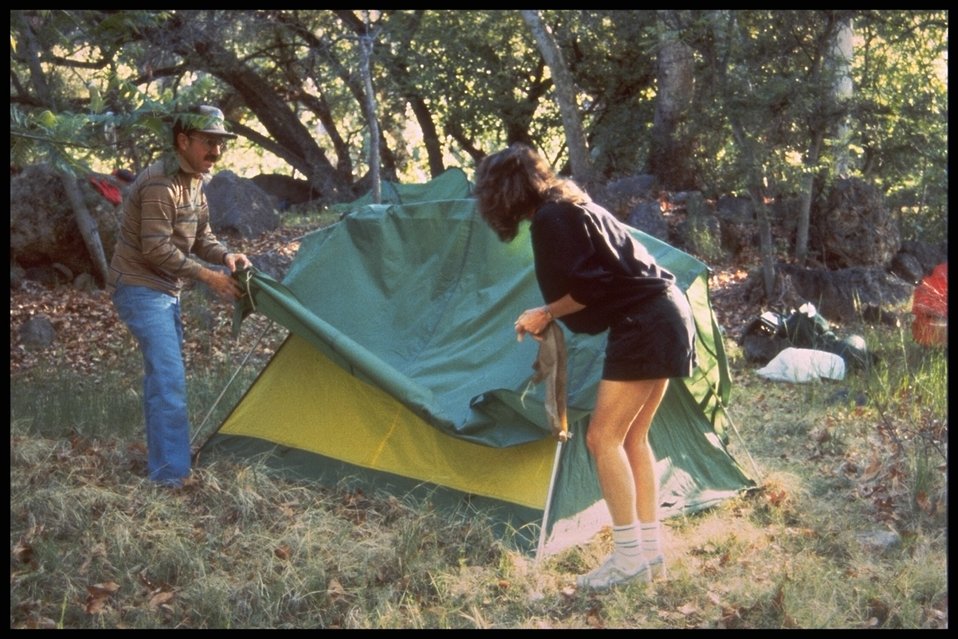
Many sites on public lands allow overnight camping. Check with your nearest BLM office to learn where is the best site to suit your recreational needs.